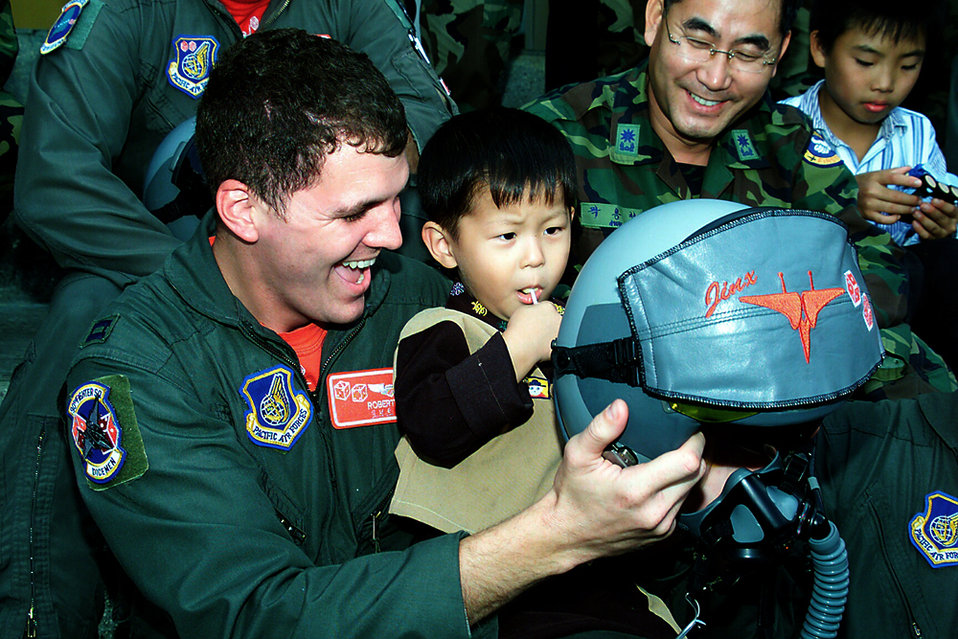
Deployed Airmen visit South Korean orphanage

GWANGJU, South Korea -- Capt. Robert Lee shows a helmet to a child during a visit to a local orphanage Sept. 24. Captain Lee is a 3rd Air Expeditionary Fighter Squadron F-15E Strike Eagle pilot.